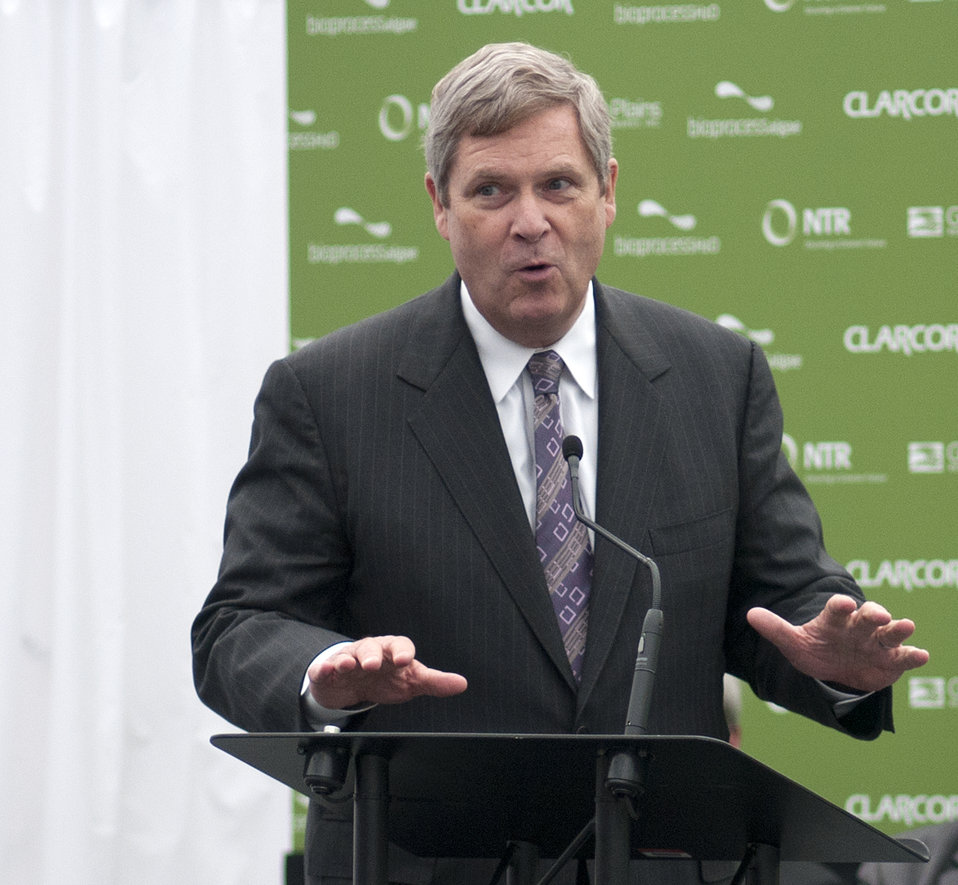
U.S. Department of Agriculture (USDA) Secretary Tom Vilsack toured BioProcess Algae facility at Green Plains Renewable Energy (GPRE), Inc. and unveiled the Phase II key component - commercial scale photo bioreactors/harvesters; after which he talked with company leadership, biologists, and engineers; guests and news media during the grand opening ceremony on April 15, 2011 in Shenandoah, IA. The operation is co-located within an GPRE’s ethanol factory and where BioProcess Algae technology is used to waste products; carbon dioxide, recycled heat and water to mass-produce algae. Algae from this facility are used for animal feeds; pharmaceutical and beauty products.